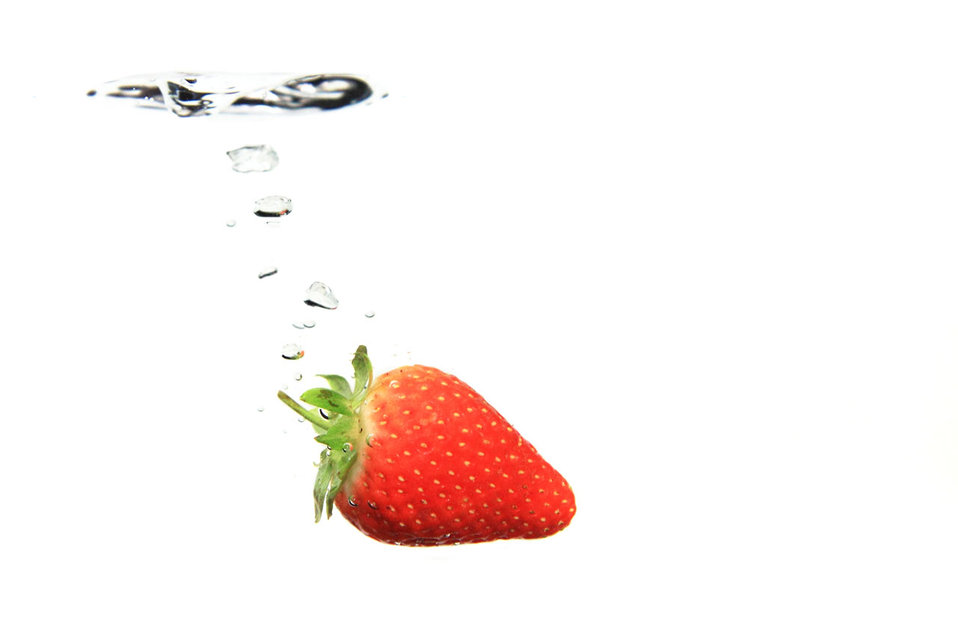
Strawberry in water with couple of bubbles.